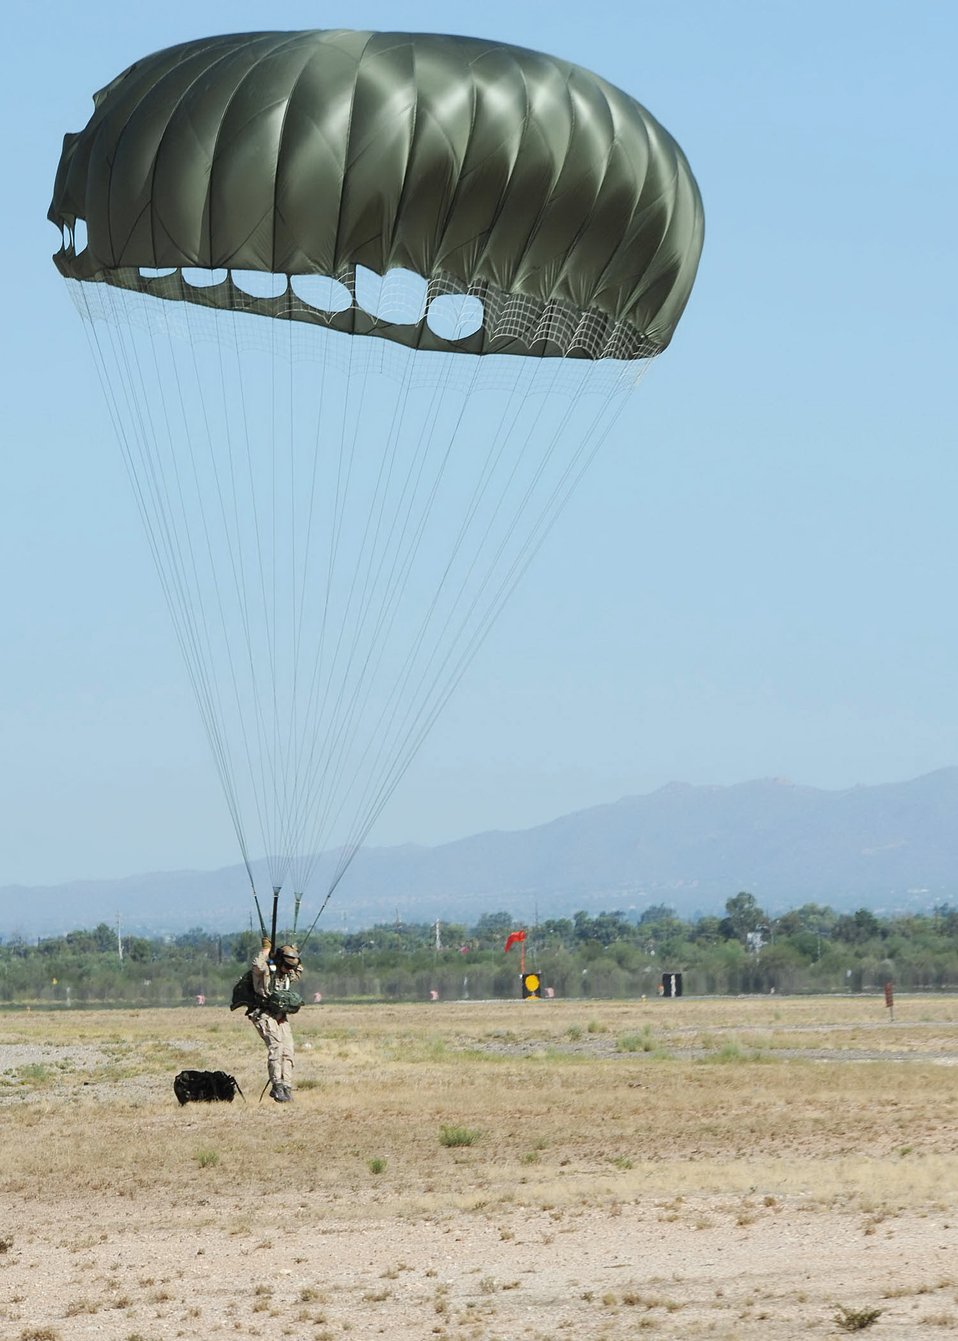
Multi-lift airdrop at Davis-Monthan AFB

Tech. Sgt. Sean McBride lands safely on the drop zone Aug. 15 at Davis-Monthan Air Force Base, Ariz.. Sergeant McBride is assigned to the 306th Rescue Squadron and was participating with members of the 79th Rescue Squadron in the first multi-lift HC-130 airdrop here.